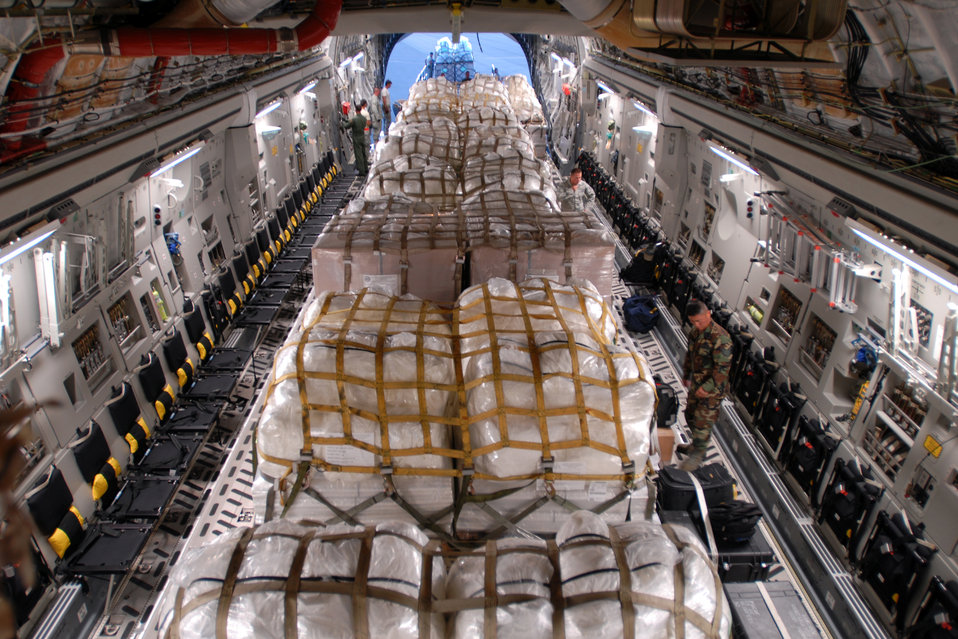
Humanitarian aid bound for tsunami relief effort

Humanitarian aid supplies from the Federal Emergency Management Agency is loaded by Hawaii Air National Guard, Hawaii National Guard and Hickam Air Force Base active-duty Airmen into a C-17 Globemaster III bound for American Samoa to assist in the relief efforts under way Sept. 30, 2009, at Hickam AFB, Hawaii. The efforts are in the wake of tsunamis triggered by an undersea earthquake Sept. 29 that has left more than 140 people dead in the South Pacific region. More than 90 Airmen and Soldiers deployed from Hawaii for the humanitarian mission.